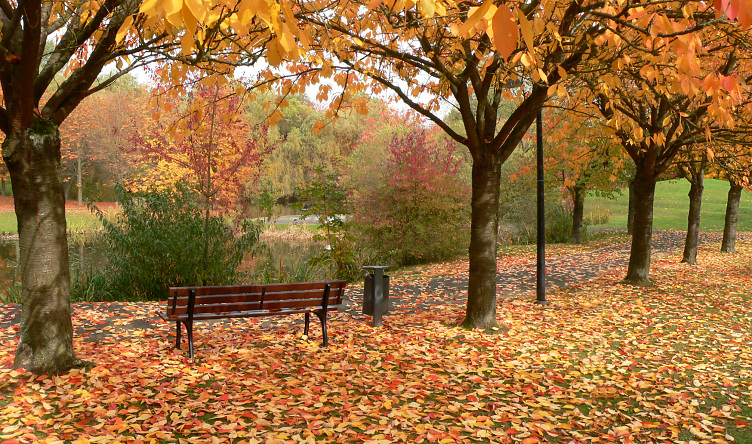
Deutsch: Im Kurpark Bad Zwesten